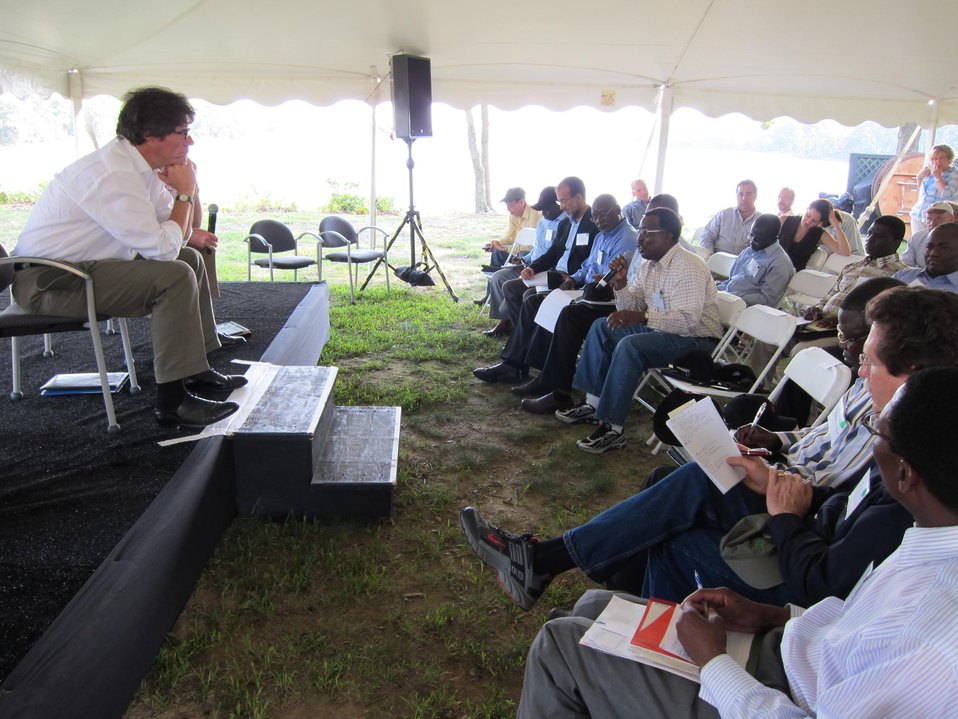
Assistant Secretary Fernandez Delivers Remarks on 'The Role of Biotechnology in Advancing African Agriculture'

Assistant Secretary of State for Economic, Energy and Business Affairs Jose Fernandez delivers remarks on 'The Role of Biotechnology in Advancing African Agriculture,” at Chesapeake Farms in Maryland on September 14, 2011.